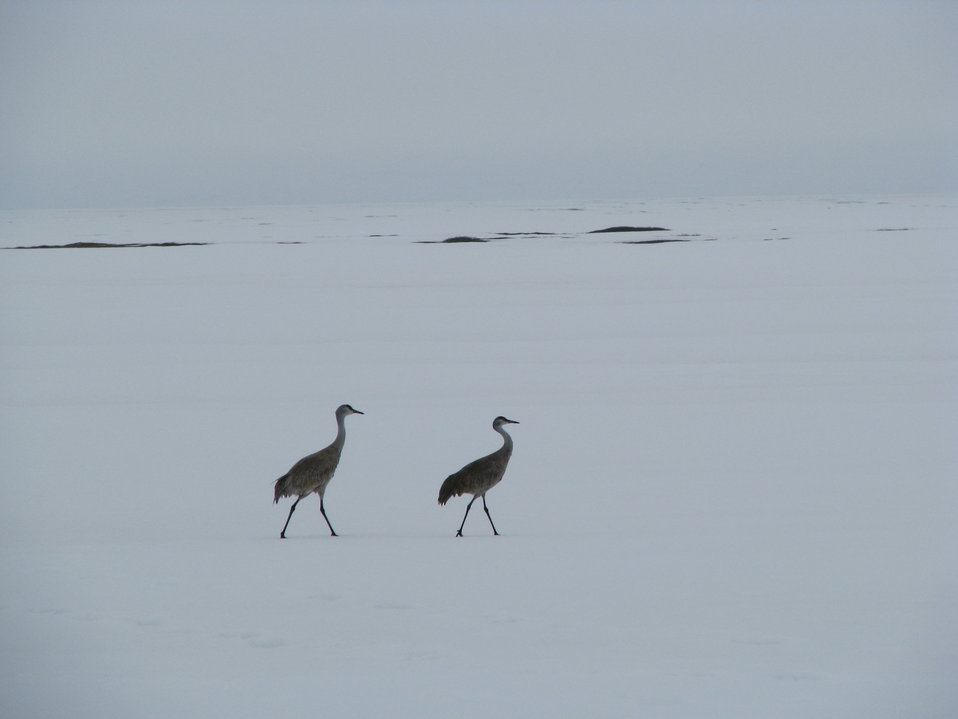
Sandhill Cranes

USFWS Yukon Delta NWR
Sandhill cranes are one of the first birds that make their appearance on the tundra. This picture was taken before breakup in April.